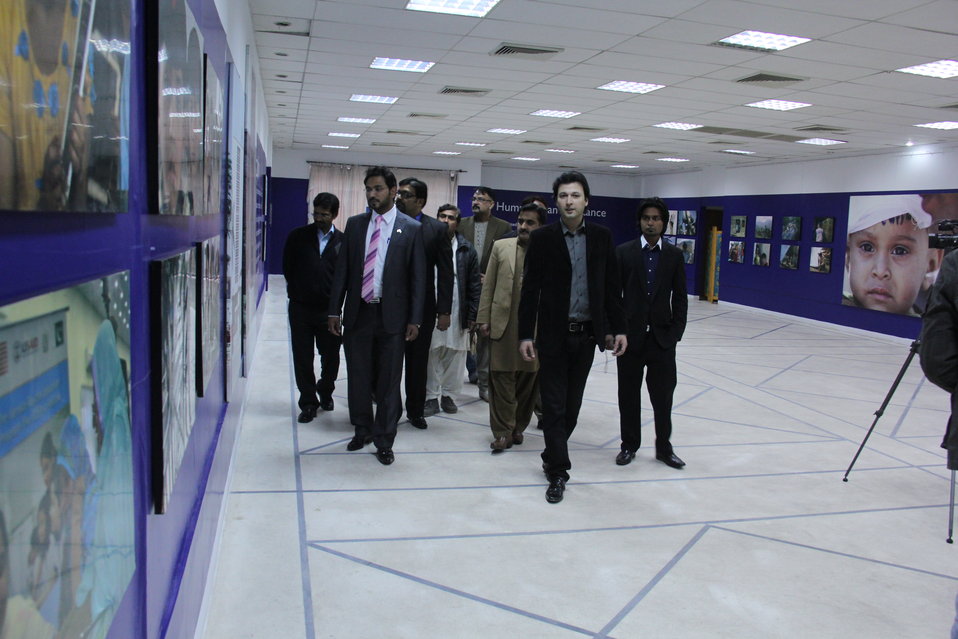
The exhibition featured images from various US Pakistan Projects.